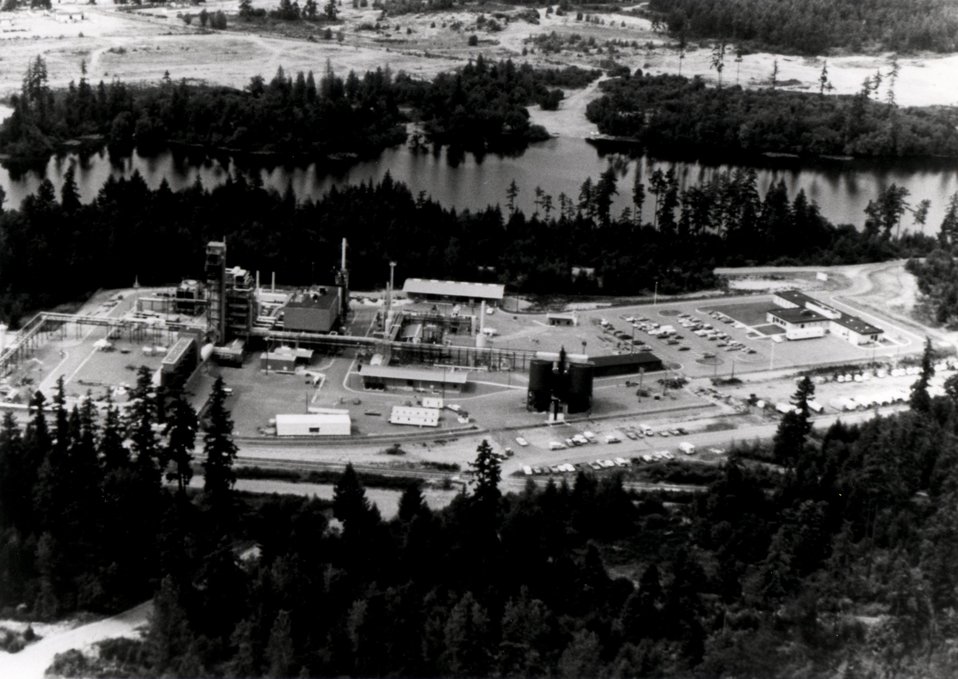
Aerial view of the U.S. Department of Energy's Solvent Refined Coal Pilot Plant at Fort Lewis, Washington.